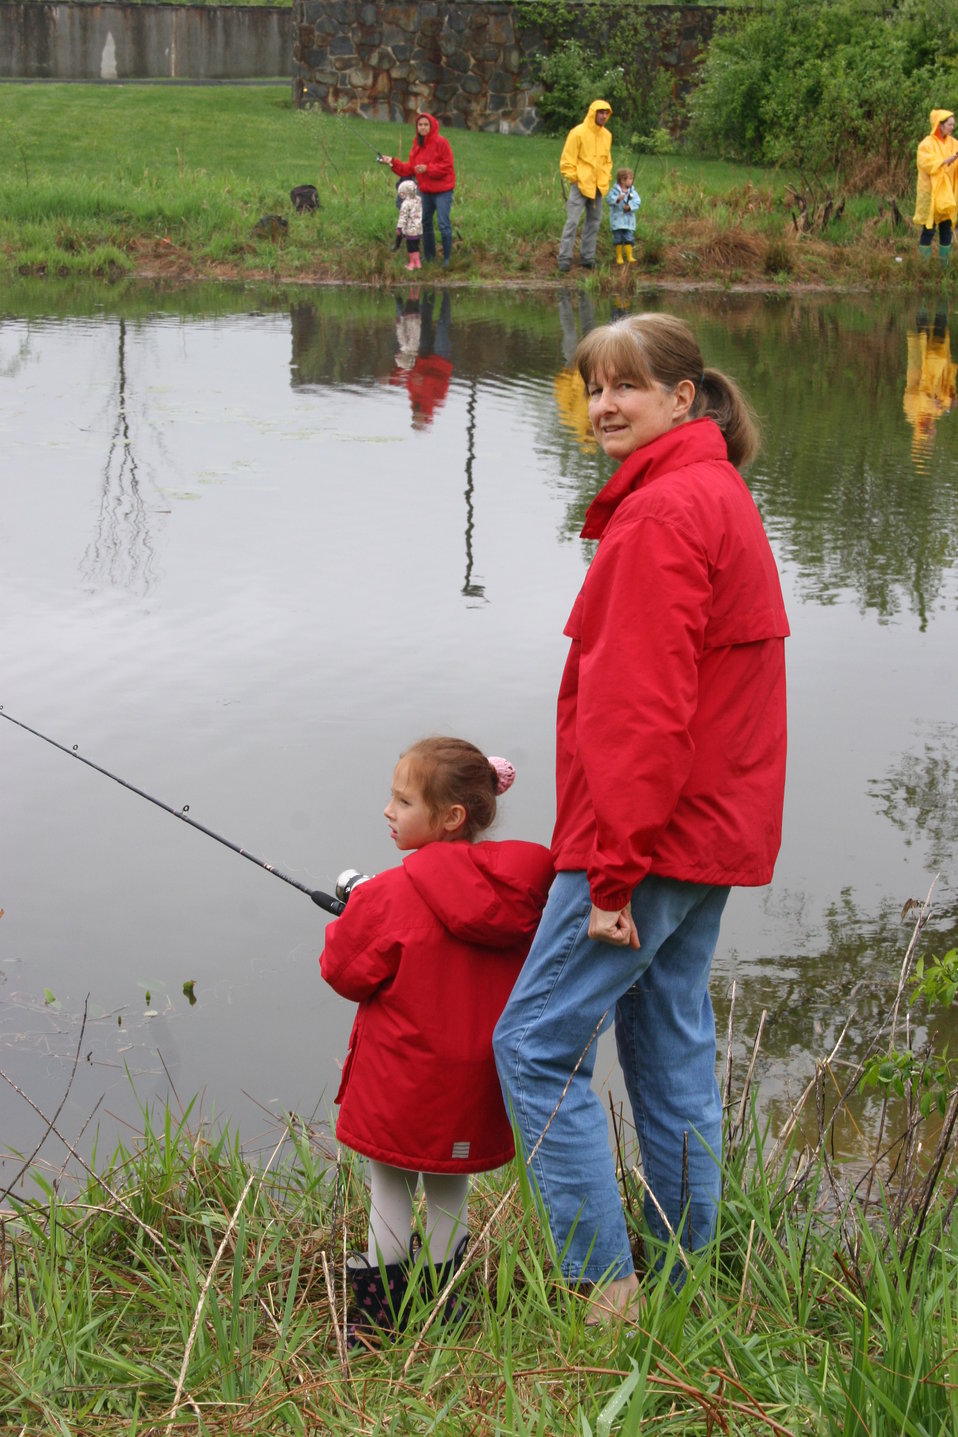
Fishing event at U.S. Fish and Wildlife Service Regional Office in Hadley, MA